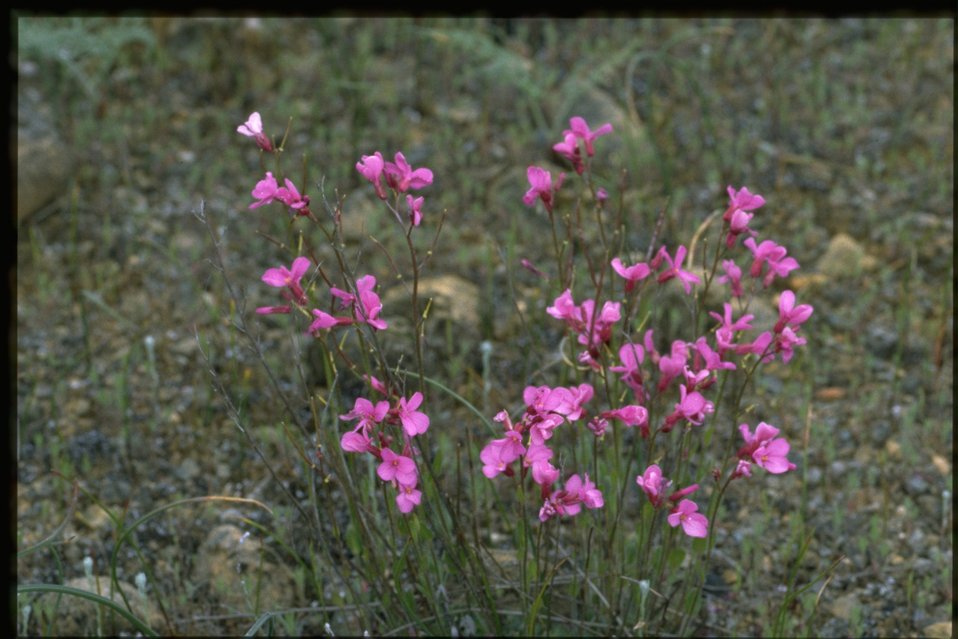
Farshot of Arabis acueolata.